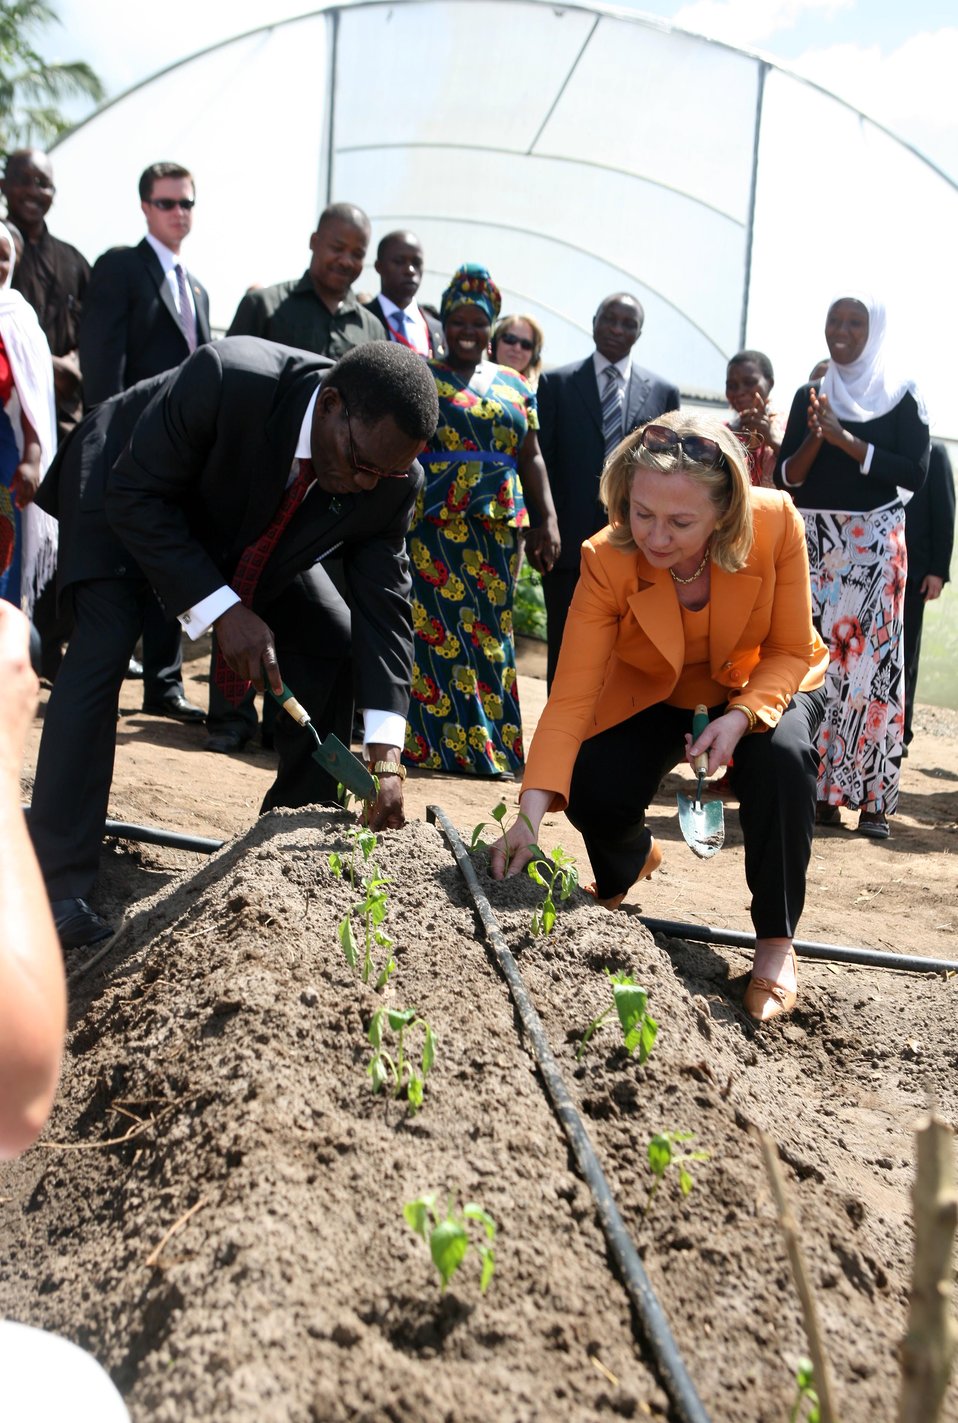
Secretary Clinton and Tanzanian Prime Minister Pinda Plant Seedlings

U.S. Secretary of State Hillary Rodham Clinton and Tanzanian Prime Minister Mizengo Pinda plant seedlings at a vegetable farm owned by Mlandizi Corporative Farm, to celebrate the Feed the Future Announcement, a U.S. commitment to support country-led plans that address the root causes of poverty, hunger, and under-nutrition, in Mlandizi, Tanzania, on June 12, 2011.